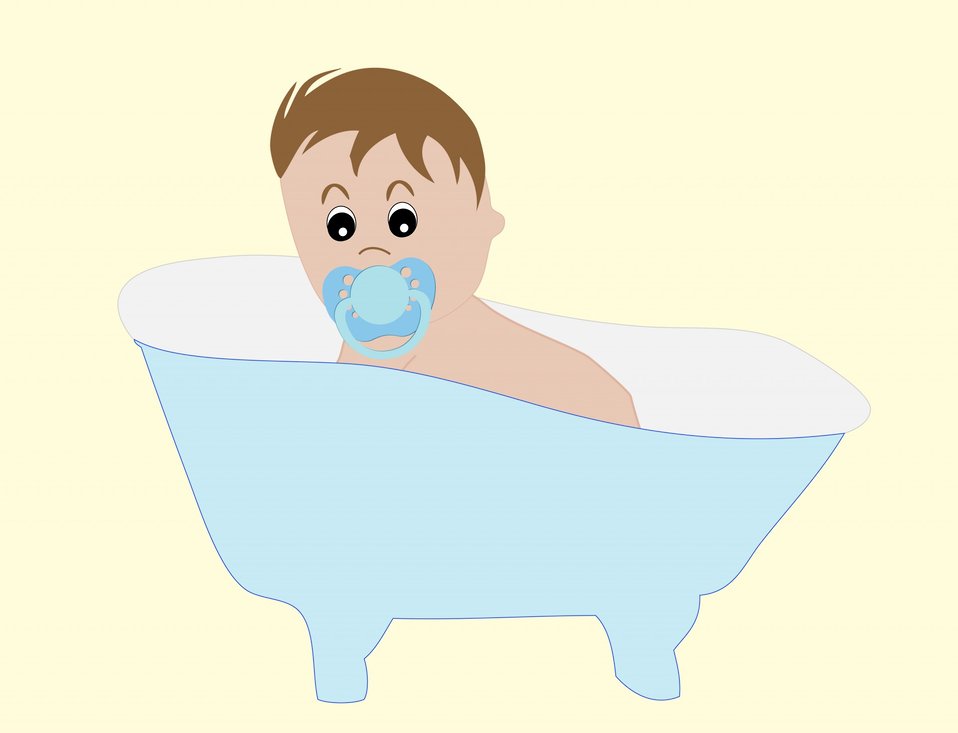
Baby boy in bathtub

Cute baby boy in bathtub for scrapbooking.